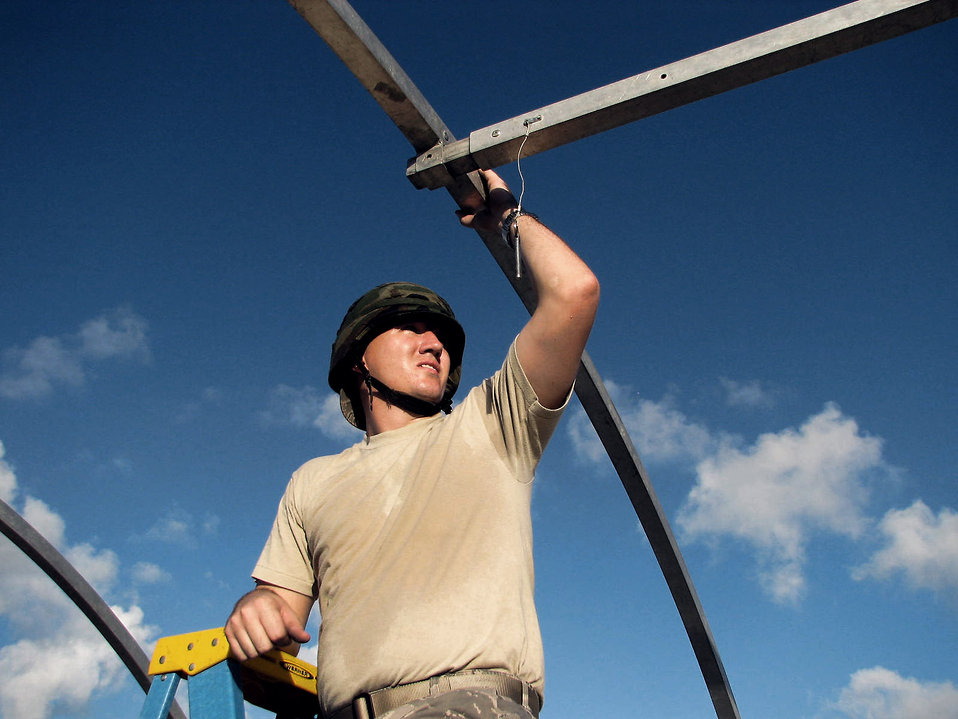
Airmen hone contingency skills at Silver Flag

Capt. Jody Hodges steadies a supporting pole during a Silver Flag tent-building exercise at Tyndall Air Force Base, Fla. Every year, about 7,600 Airmen from a variety of career fields visit Tyndall AFB to improve their contingency skills and to learn how to open, establish and sustain a forward operating base.